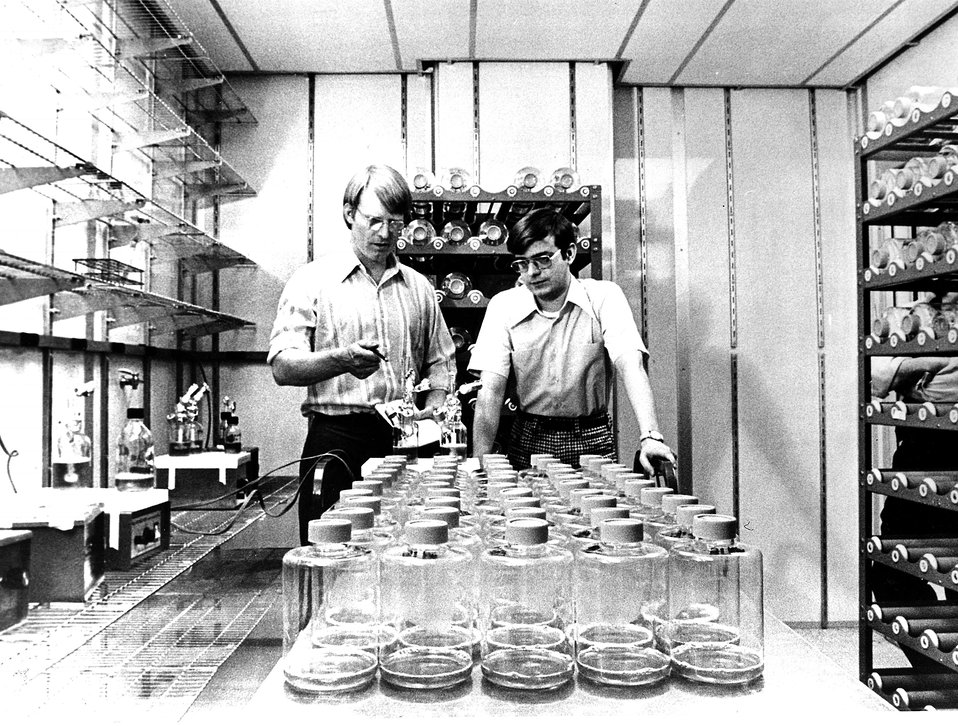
Burning coal and other fossil fuels produces soot, which may damage the human genetic structure. Circa 1977.